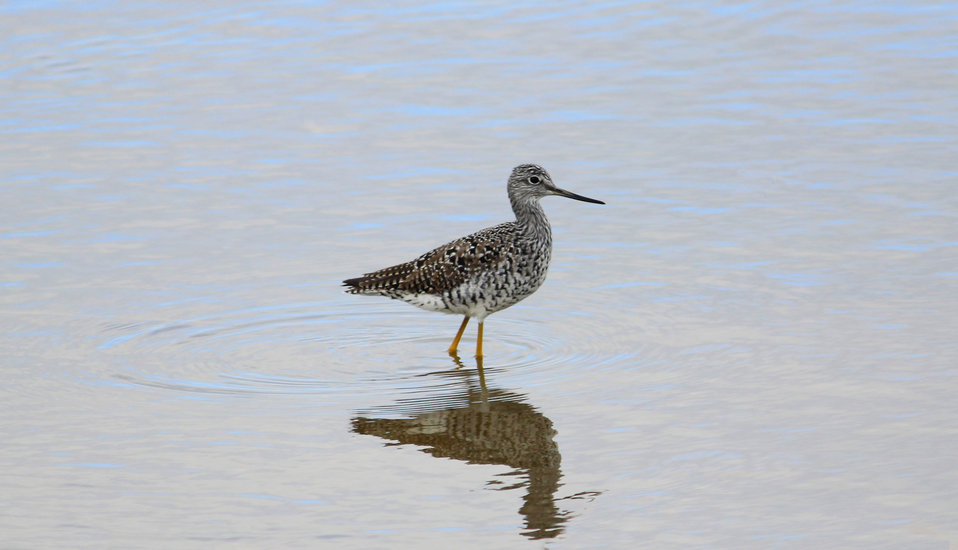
Greater Yellowlegs

The Greater yellowlegs (Tringa melanoleuca) is a common shorebird in North Dakota. It finds its prey by probing in the mud or by sweeping its bill side-to-side through the water.